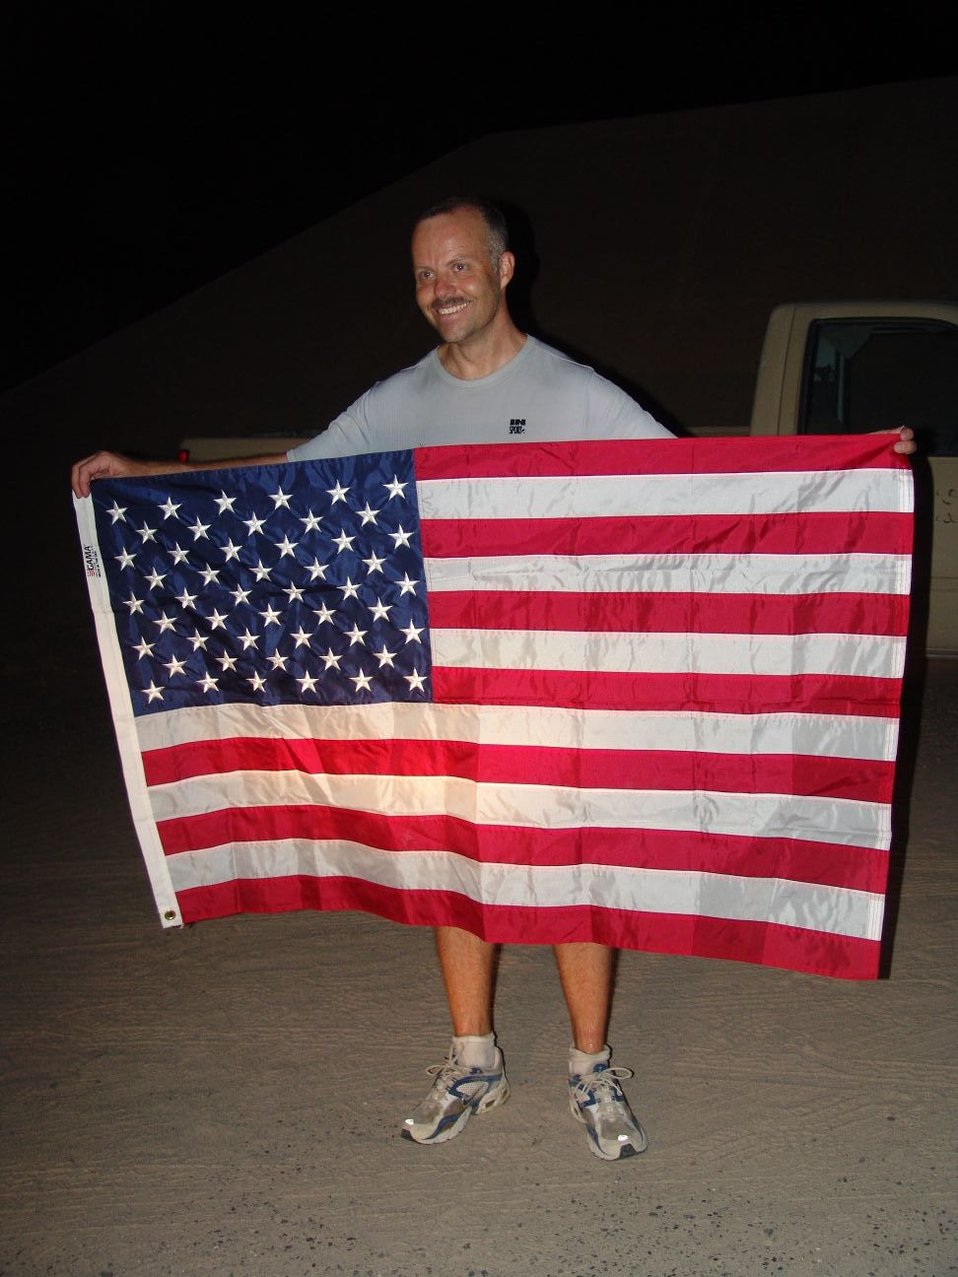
Sergeant runs marathon for his father

SOUTHWEST ASIA -- Tech. Sgt. Peter Rearick holds up an American flag his co-workers gave him minutes after completing a 26.2-mile marathon he ran for his father July 19. His father, an avid marathoner, suffered a heart attack recently and is scheduled to have heart surgery in August. Sergeant Rearick is a C-130 Hercules flight engineer with the 738th Expeditionary Airlift Squadron at a forward-deployed location.